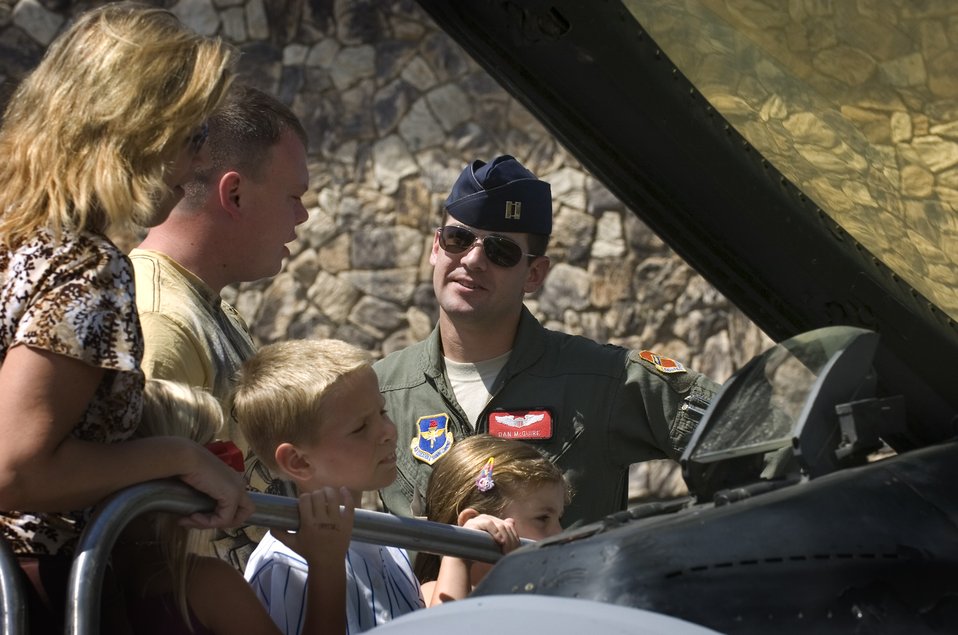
Air Force Week in the Heartland reaches out to Omaha zoo

Capt. Dan McGuire (right) answers questions about an F-16 Fighting Falcon from Becky (left), Jenna, Jack, Kyle (yellow shirt) and Kyrah Krenke-Dailey family during Air Force Week in the Heartland Aug. 12 at the Henry Doorly Zoo in Omaha, Neb. Captain McGuire is a pilot with the 56th Training Squadron from Luke Air Force Base, Ariz. Zoo visitors also had the chance to see the Do Something Amazing display, a motion simulator and video simulators during Air Force Week in the Heartland.